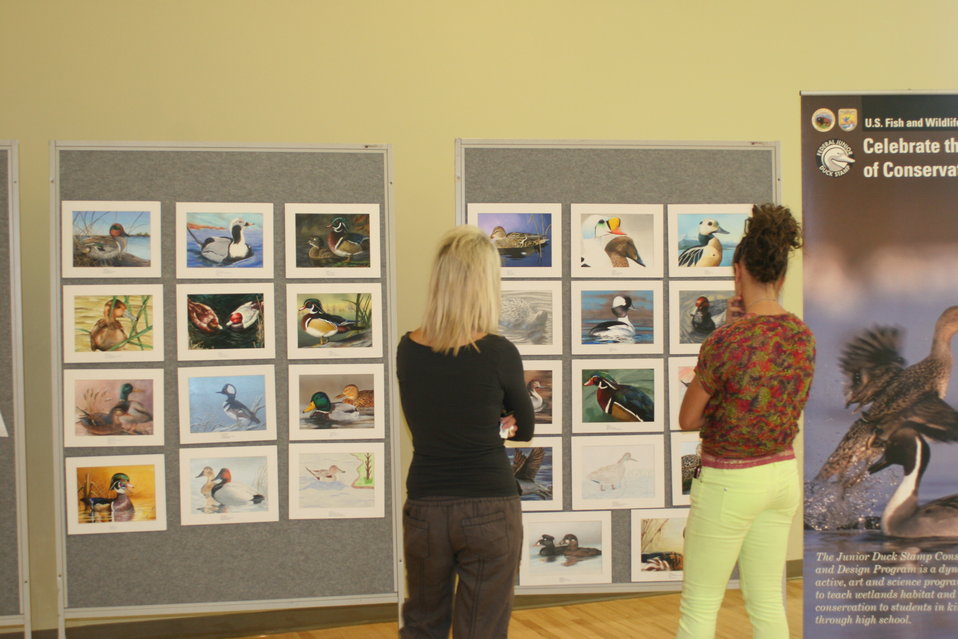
Artwork Viewing

Photo Credit: Suzanne Fellows / USFWS
The U.S. Fish & Wildlife Service sponsored the 2012 Federal Duck Stamp Art Contest September 28 and 29 in Ogden, Utah, at Weber State University. A panel of five judges was responsible for choosing the art work used to design the 2013-2014 Migratory Bird Hunting and Conservation Stamp.